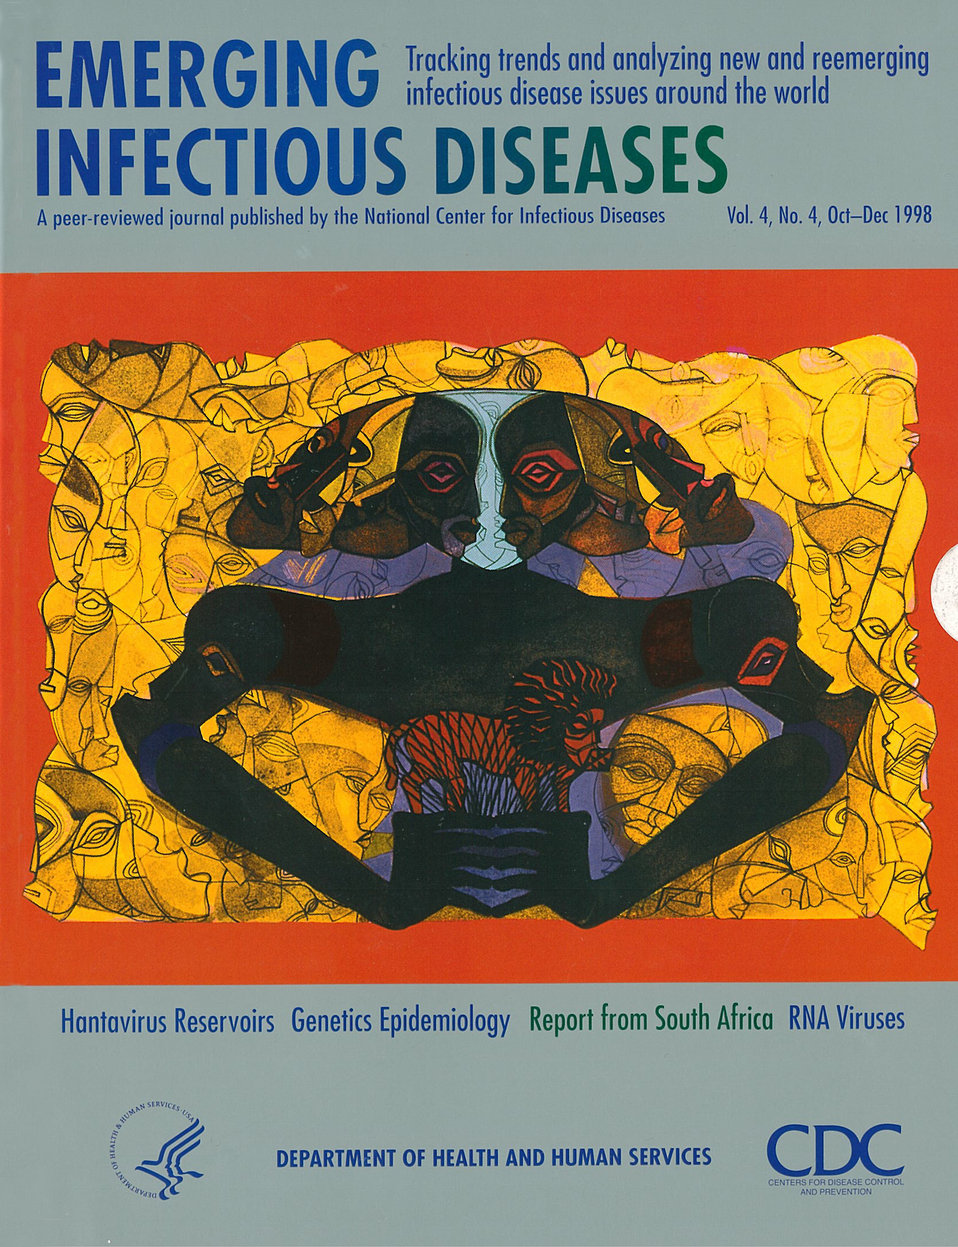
Emerging Infectious Diseases (EID) cover artwork for Volume 4, Number 4, October-December 1998 issue.